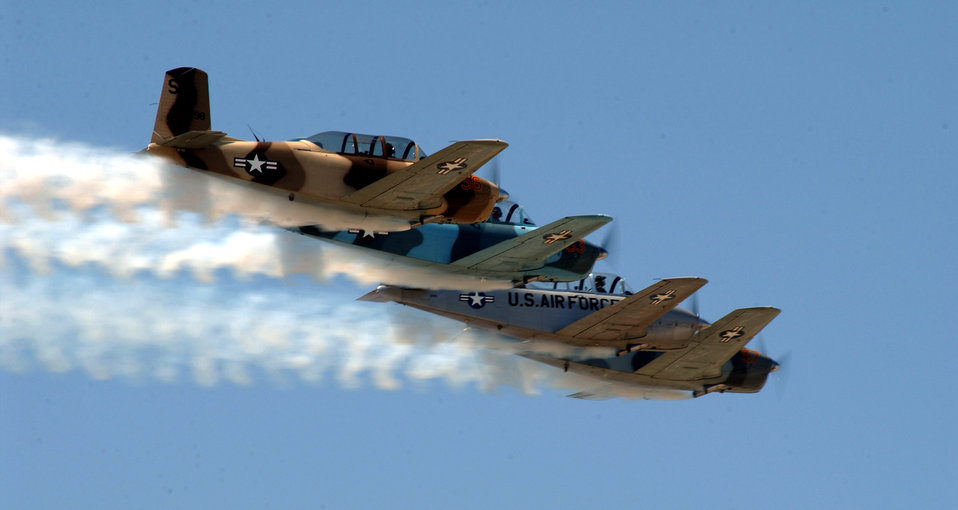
Four T-34s in formation

OVER MARCH AIR RESERVE BASE, Calif. -- Four T-34C Turbo Mentors from the March Field Aero Club T-34 flight team fly in formation during Airfest 2004 here April 24. The two-day air show featured both military and civilian aerial and ground demonstrations April 24 to 25.